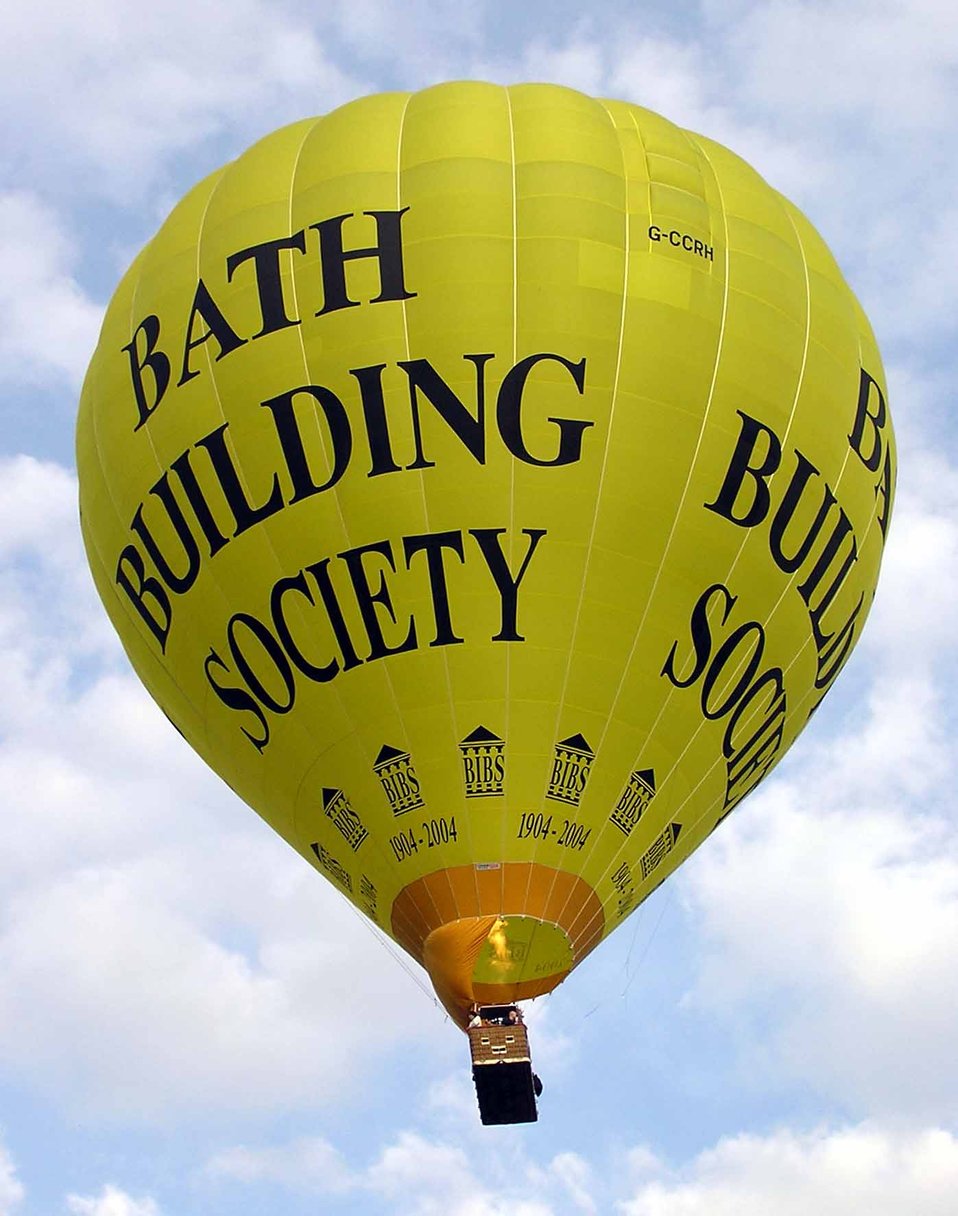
Yellow.balloon.takesoff.in.bath.arp